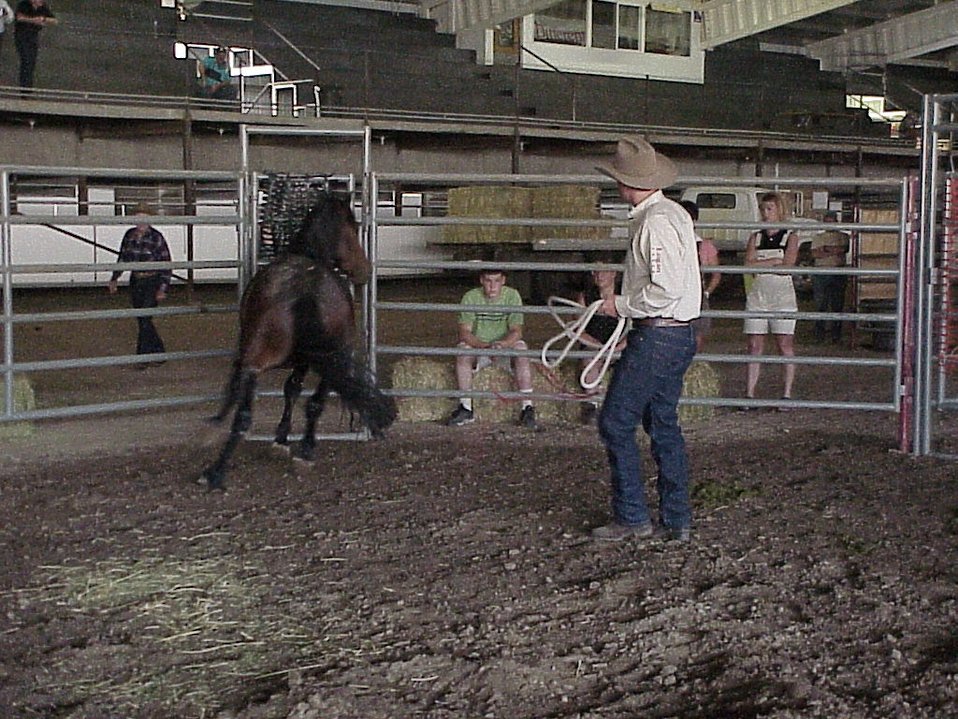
Horse Gentler Mario Johnson Lewiston Wild Horse and Burro Adoption Program Auction WHB indoor auction Cottonwood Field Office UCSC Upper Columbia Salmon Clearwater District